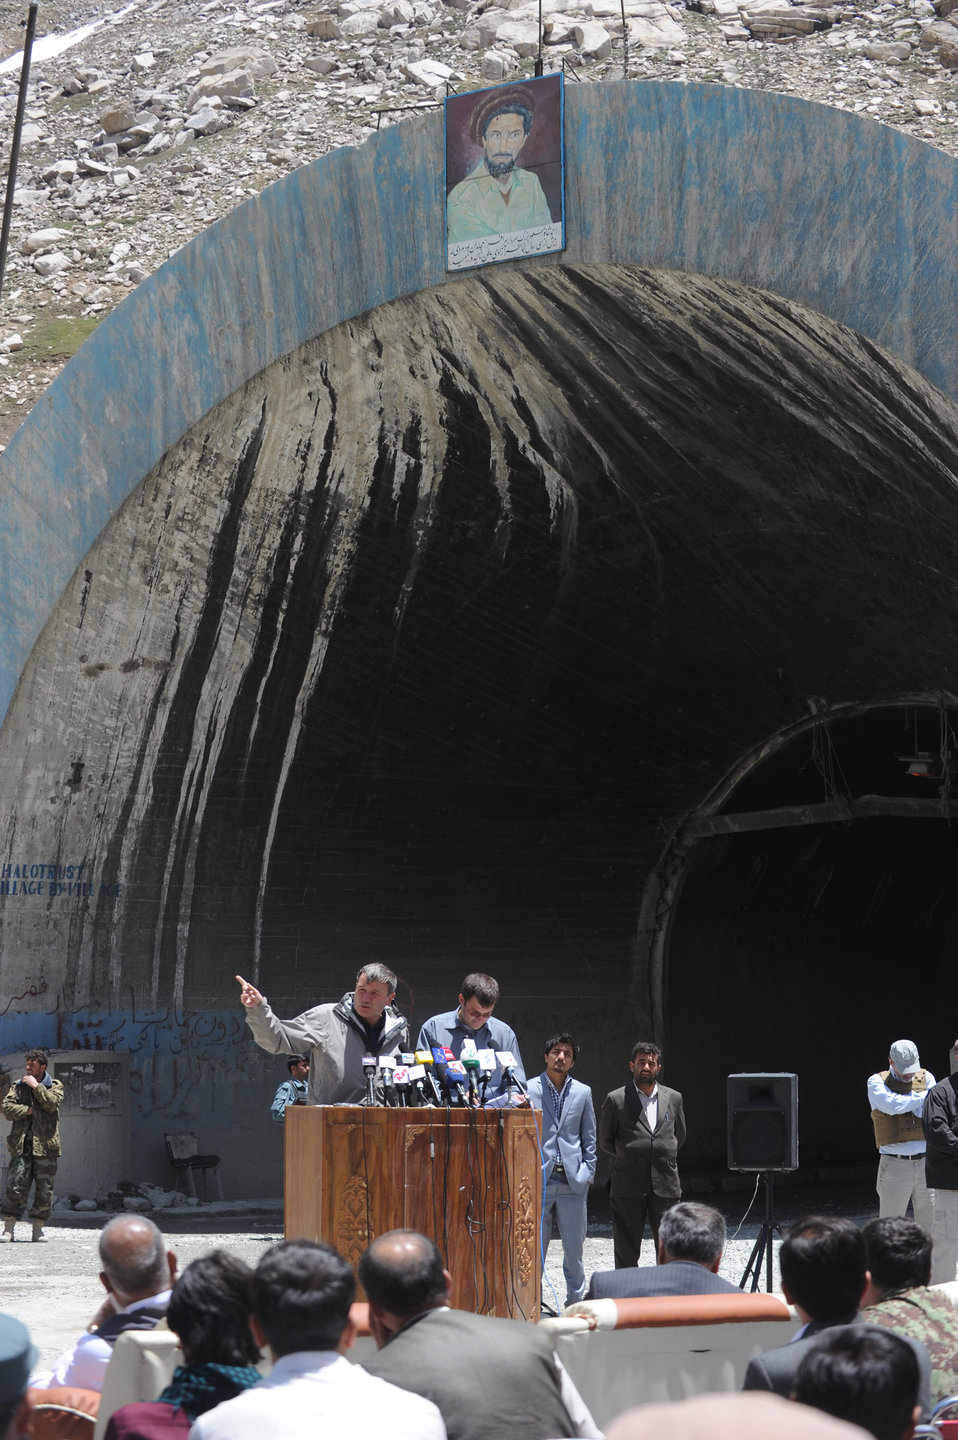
U.S. Ambassador Karl W. Eikenberry makes remarks during a ceremony to mark the beginning of renovations at the Salang Tunnel on the border of Parwan and Baghlan Provinces, Afghanistan, on Wednesday, June 15, 2011. (S.K.Vemmer/Department of State)